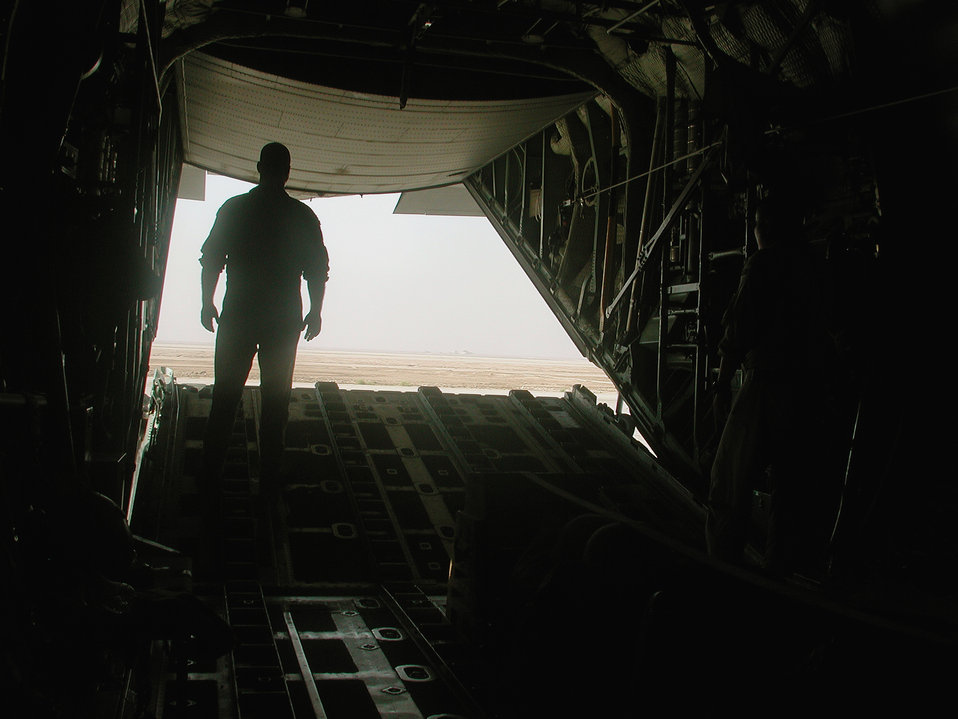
silent helpers

BASRA INTERNATIONAL AIRPORT, Iraq -- Senior Airman Aaron Hillenberg stands at the back of a C-130 Hercules while waiting to taxi here. C-130s are one of the main Air Force assets that perform missions out of Basra. Hillenberg is a C-130 loadmaster deployed from the 96th Airlift Squadron at Minneapolis International Airport.